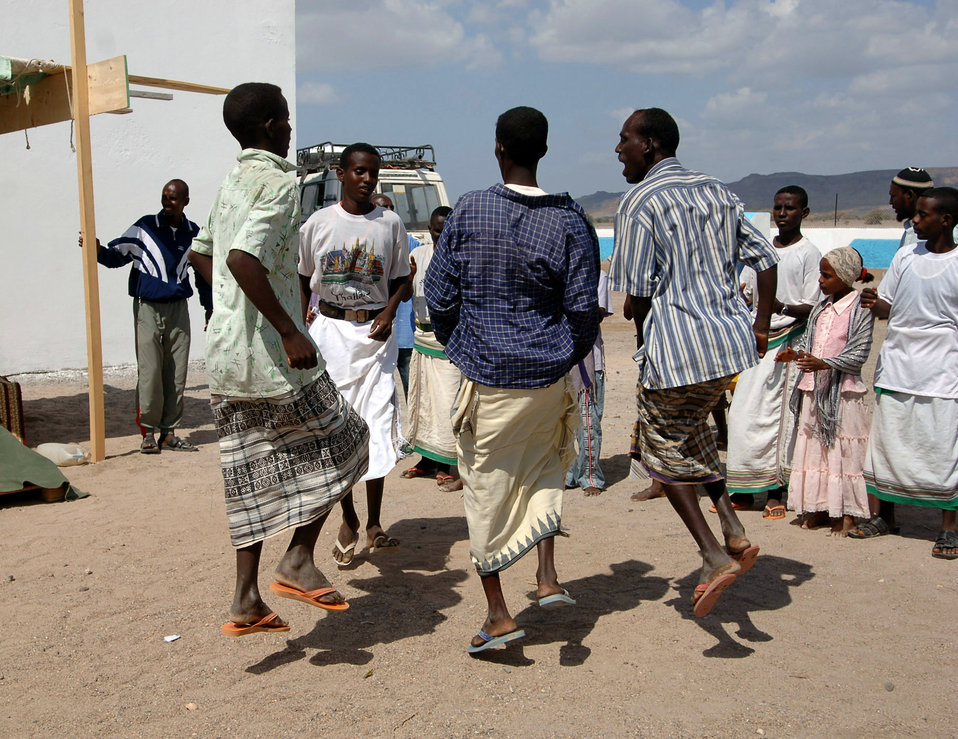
Servicemembers celebrate school dedication in Djibouti

Kouta Bouya villagers put on a traditional dance for the U.S. servicemembers and the U.S. Embassy to Djibouti representative on hand to celebrate the Kouta Bouya Primary School dedication ceremony Dec. 17 in Djibouti.